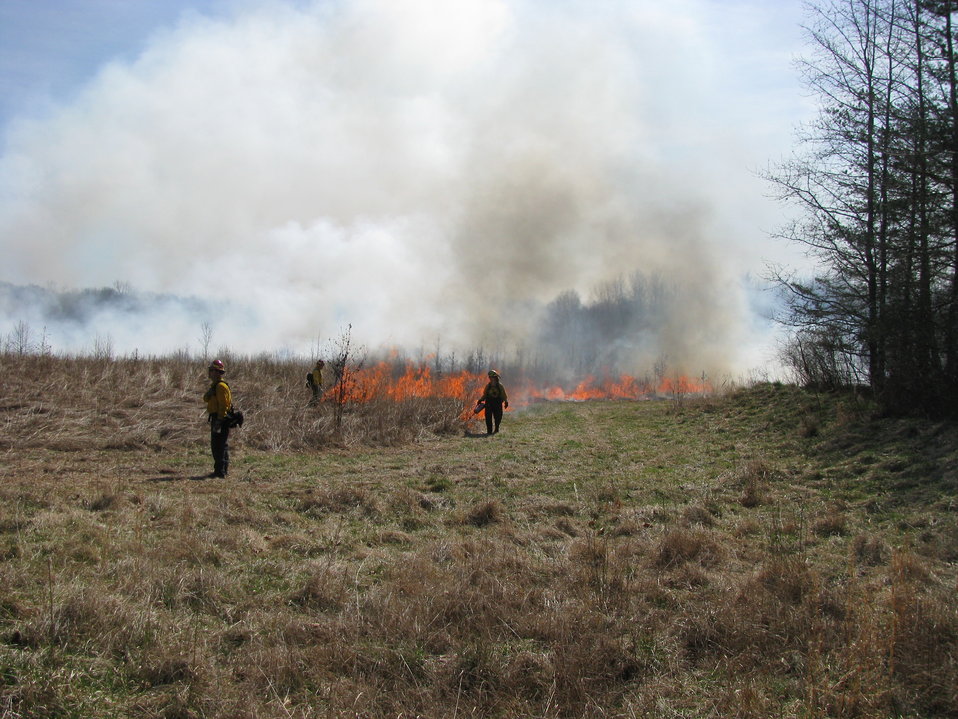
Lighting Grassland Burn

Laurel, Maryland, April 14, 2012: Fire experts wearing lightweight fire-resistant clothes ignite a controlled burn. The burn, at Patuxent Research Refuge, was to maintain native grasslands, remove woody vegetation, and control invasive species such as Korean Lespedeza.